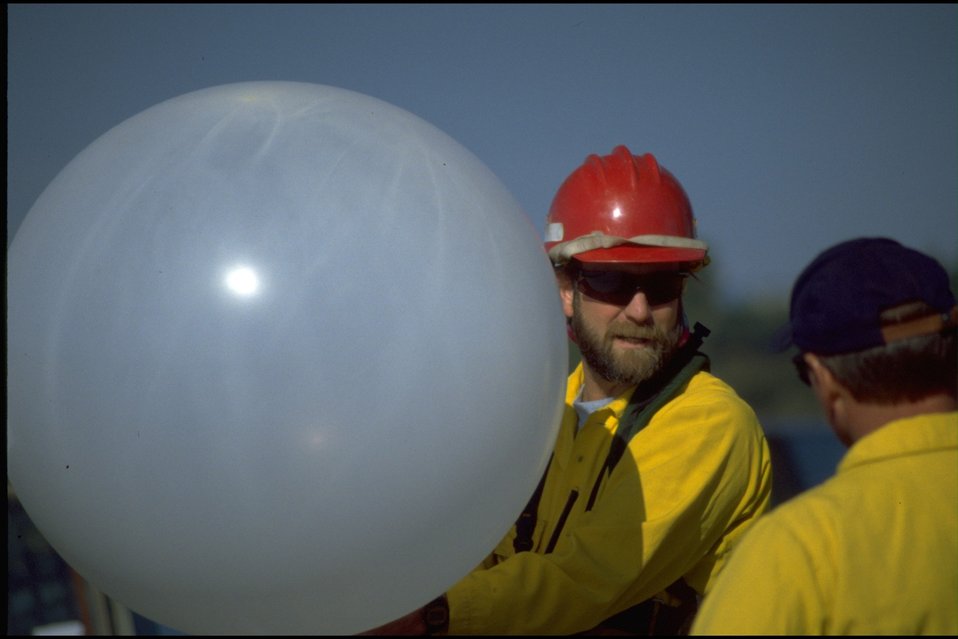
Turtle-Swale Wetland Burn (Dave Reed).